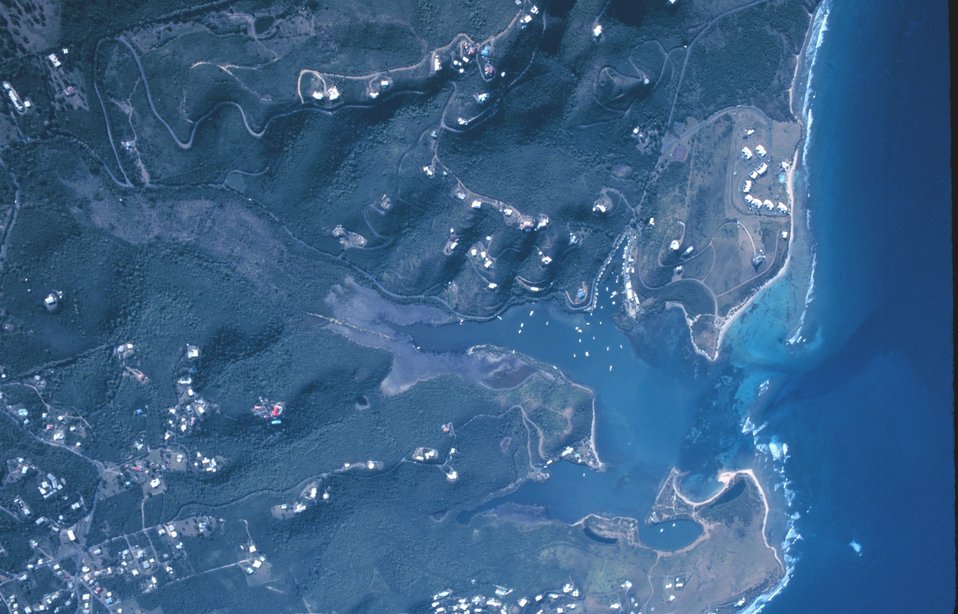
Aerial view of Salt River Bay